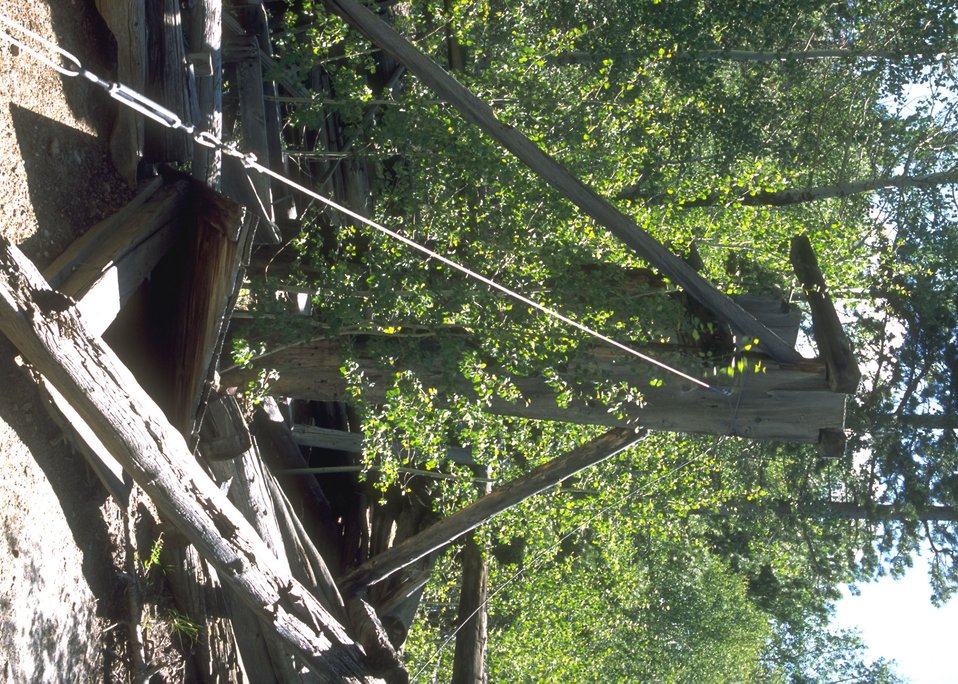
Old hoist at Miners Delight, Lander Field Office.